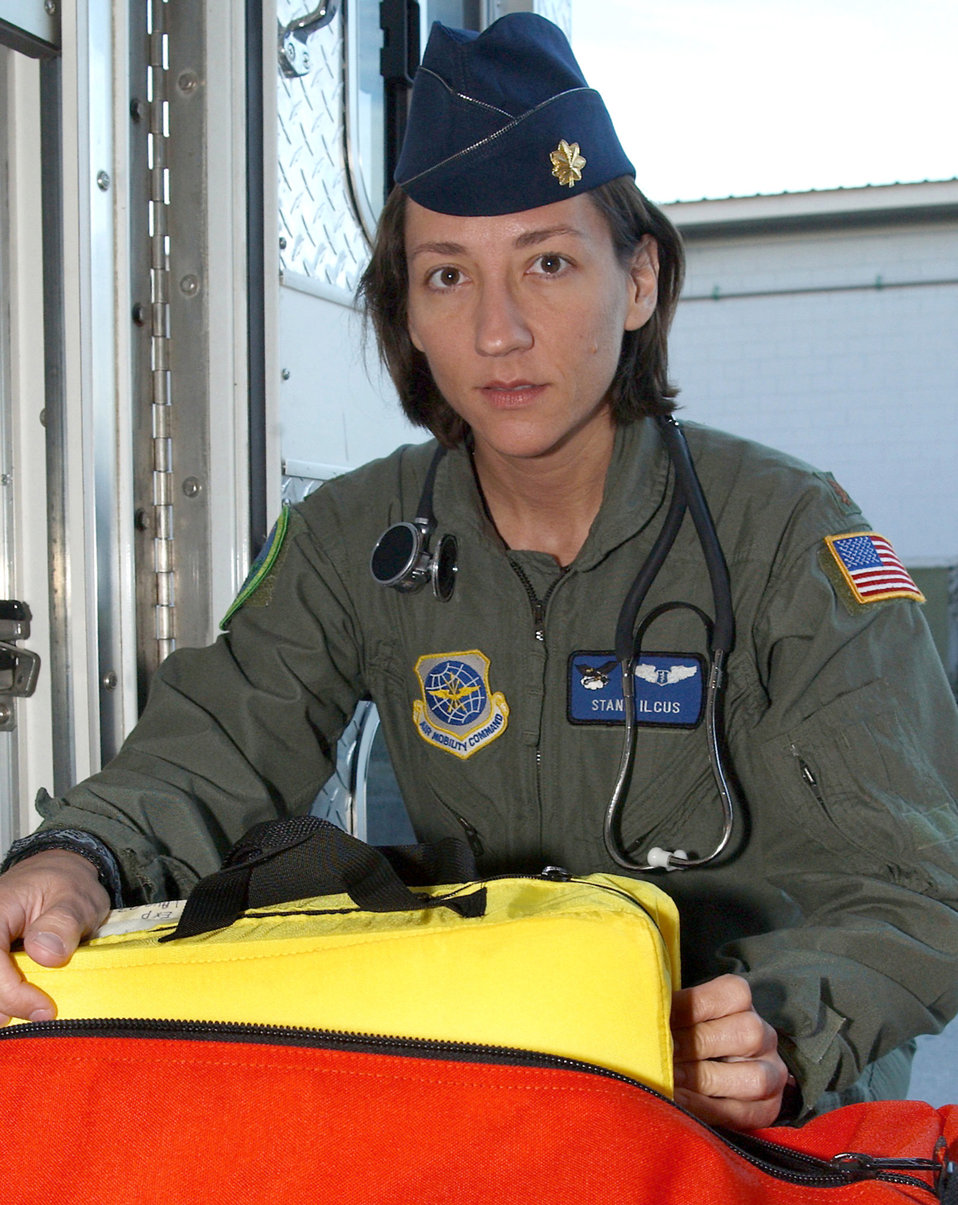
Major doctor

OPERATION IRAQI FREEDOM -- Maj. (Dr.) Lidia Ilcus loads her equipment in an ambulance. She is a flight doctor with the 28th Expeditionary Air Refueling Squadron in Southwest Asia and joined the Air Force shortly after the events of Sept. 11, 2001.